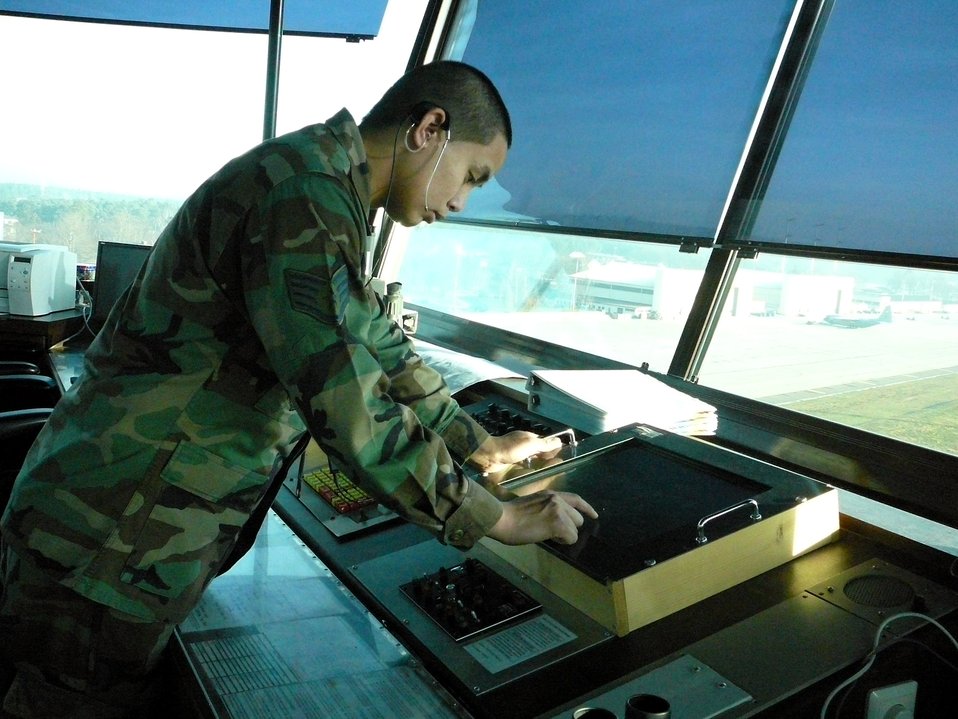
Ramstein Air Traffic Control

Staff Sgt. Mark Paraoan monitors the lighting control panel Dec. 29 in the air traffic control tower on Ramstein Air Base, Germany. As an air traffic controller, he is responsible for monitoring the CAT II instrument landing system to ensure all components of the system are working. The ILS is a new system which allows aircraft and crews to land in very low-visibility conditions. Sergeant Paraoan is with the 1st Combat Communications Squadron.